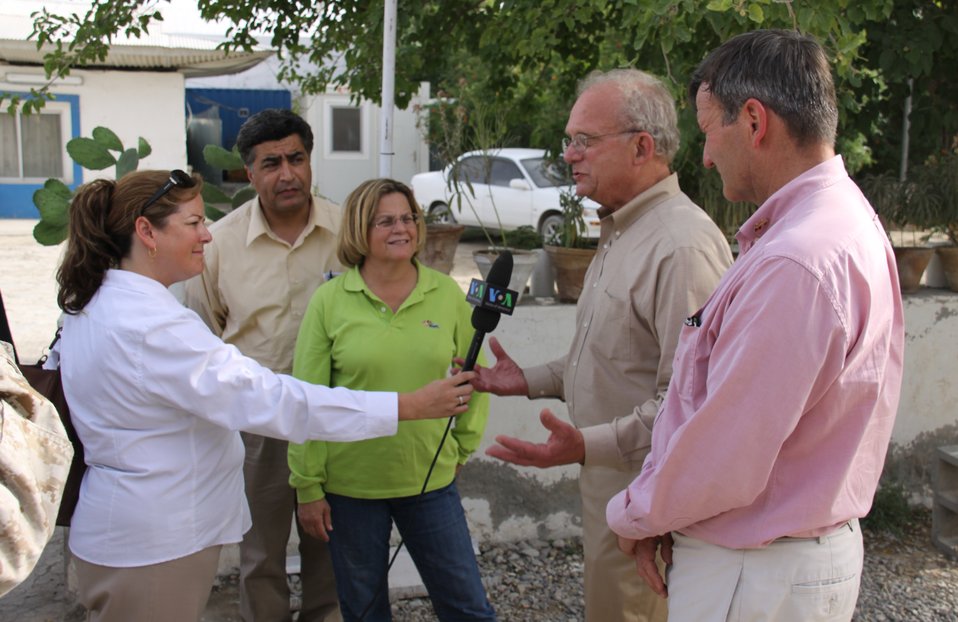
Meeting with Local Leaders in Kandahar